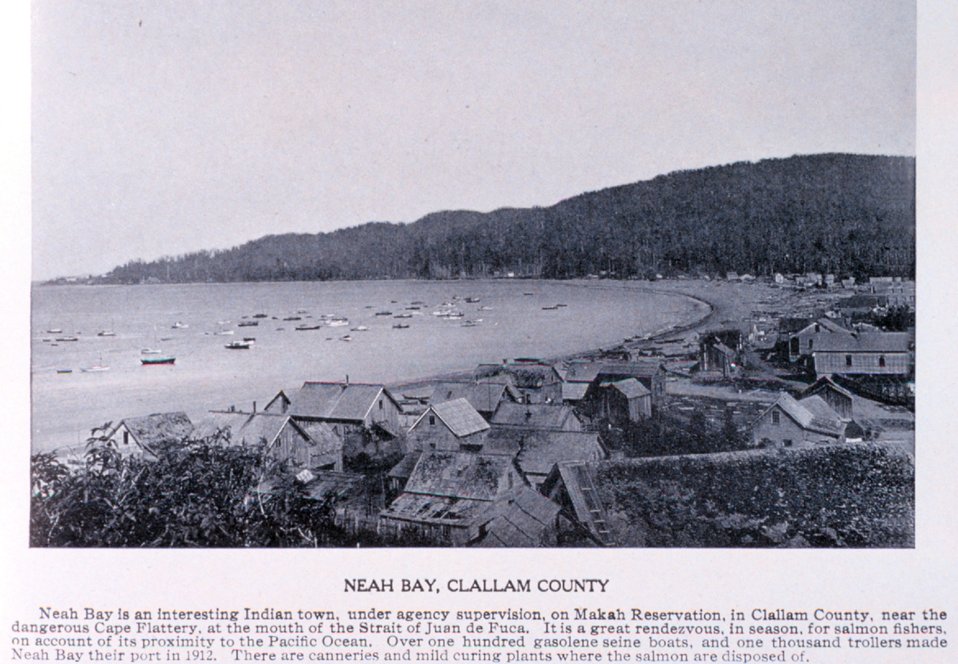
'Neah Bay, Clallam County'. In: 'Puget Sound and Western Washington Cities-Towns Scenery', by Robert A. Reid, Robert A. Reid Publisher, Seattle, 1912. P. 137.